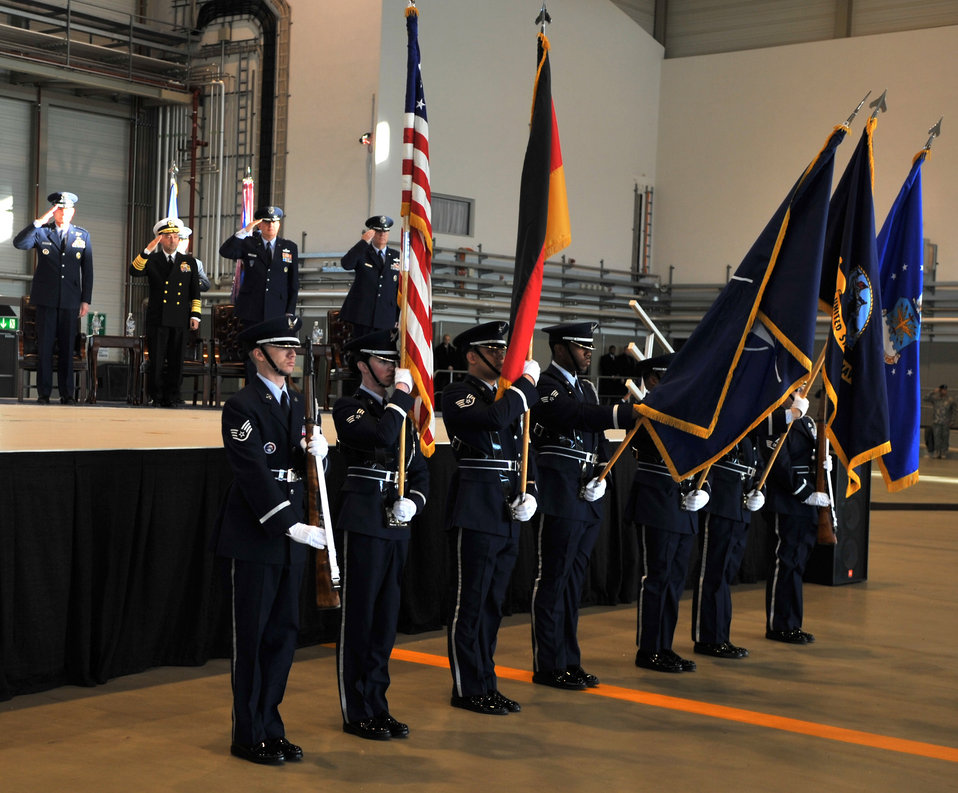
Gen. Mark A. Welsh III takes command of USAFE

Air Force Chief of Staff Gen. Norton Schwartz, Navy Adm. James G. Stavridis, European Command and Supreme Allied Commander, Europe, Gen. Roger A. Brady, outgoing U.S. Air Forces in Europe commander, and incoming Gen. Mark A. Welsh III, U.S. Air Forces in Europe commander, present arms during the posting of the colors and playing of the National Anthems to begin a change of command ceremony, Ramstein Air Base, Germany, Dec. 13, 2010. Gen. Brady, outgoing USAFE commander, relinquished command during the change of command ceremony after providing command and control for air, space and missile defense for activities in an area of operations covering almost one-fifth of the globe which included 51 countries in Europe, Asia, the Middle East, and the Arctic and Atlantic oceans.